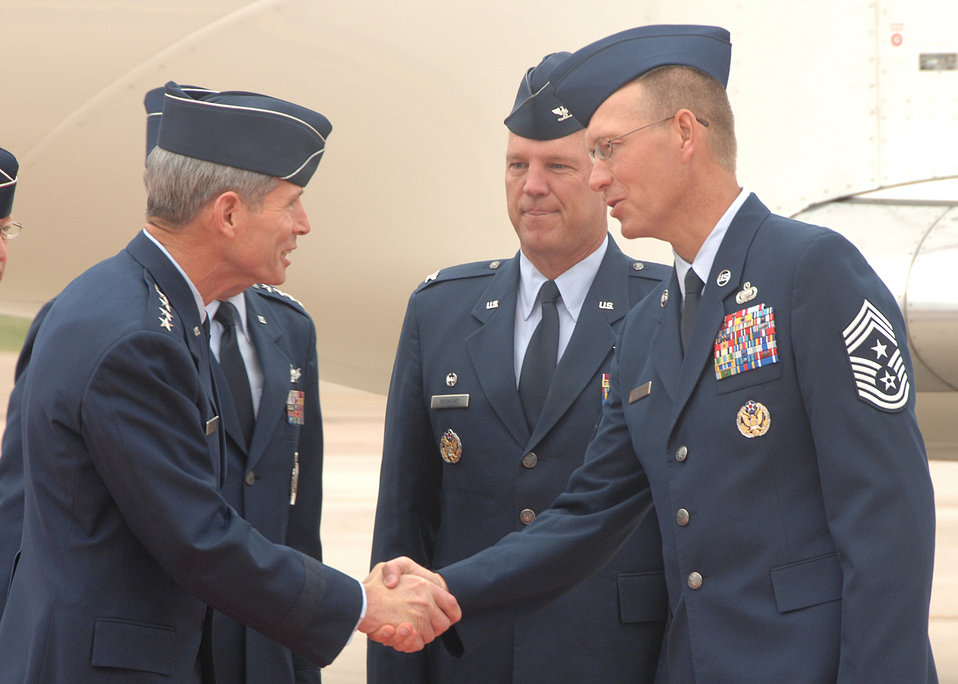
Air Force Chief of Staff defines standard of excellence

Air Force Space Command Chief Richard Small (right), and Col. Jay Raymond, 21st Space Wing commander, greet Gen. Norton Schwartz, Air Force Chief of Staff upon his arrival at Peterson Air Force Base, Colo., Sept. 2.